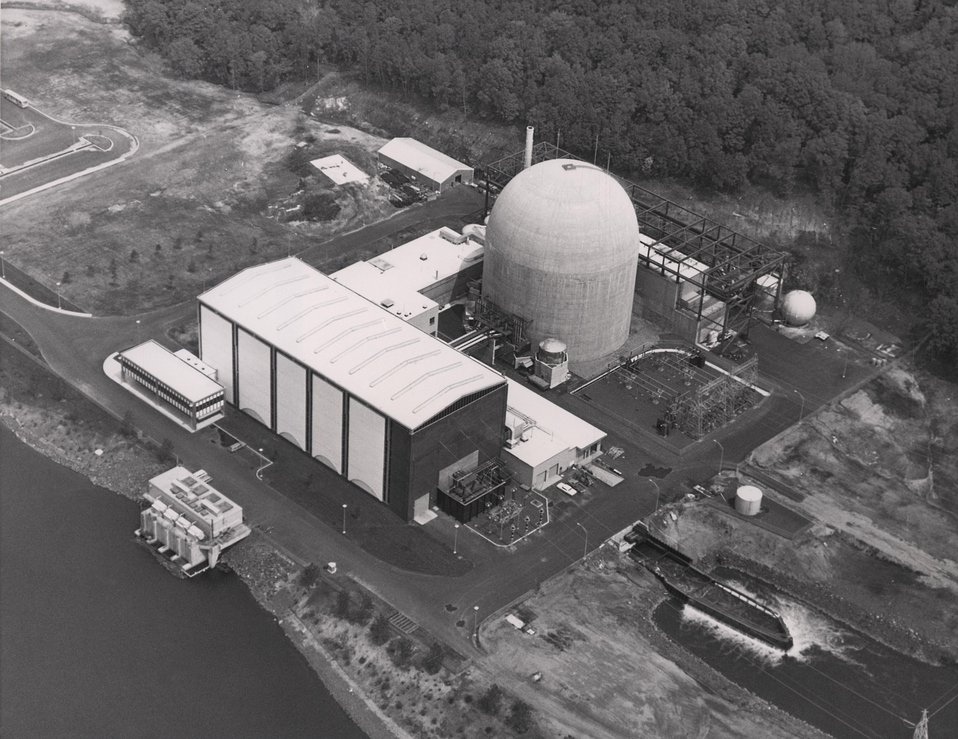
Haddam Neck.